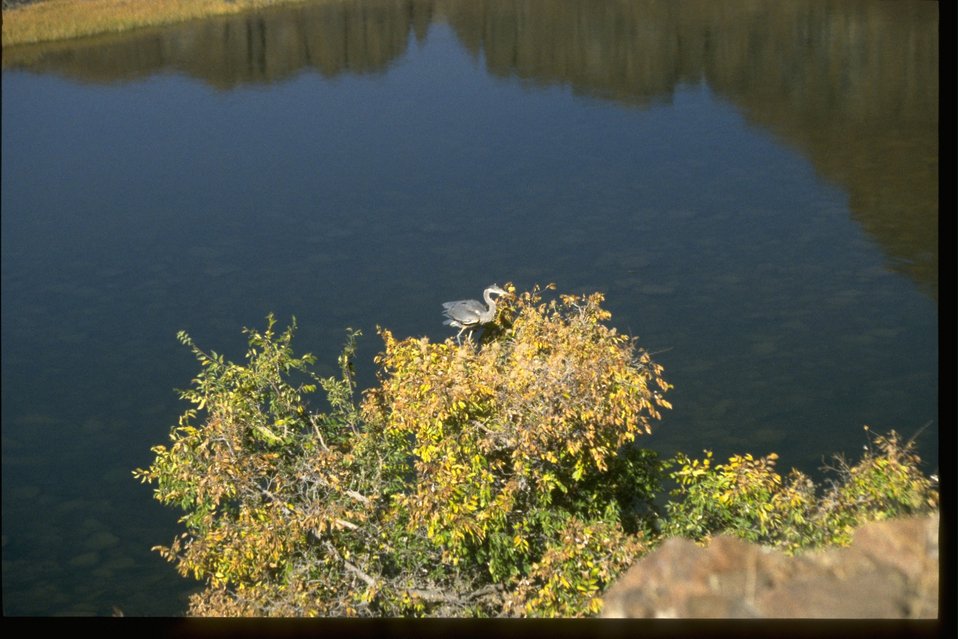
Heron perched on top of bush along the John Day River.